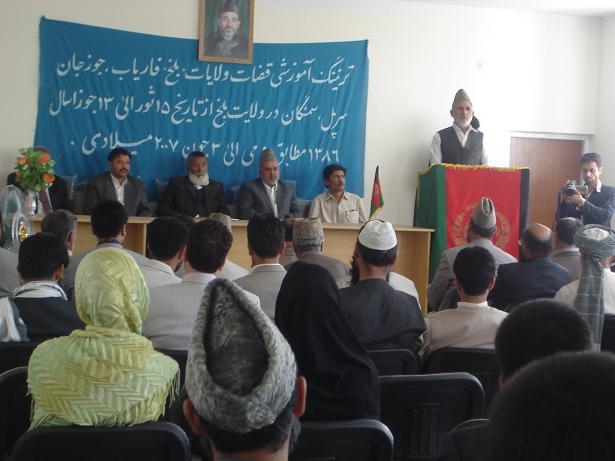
Judges Training